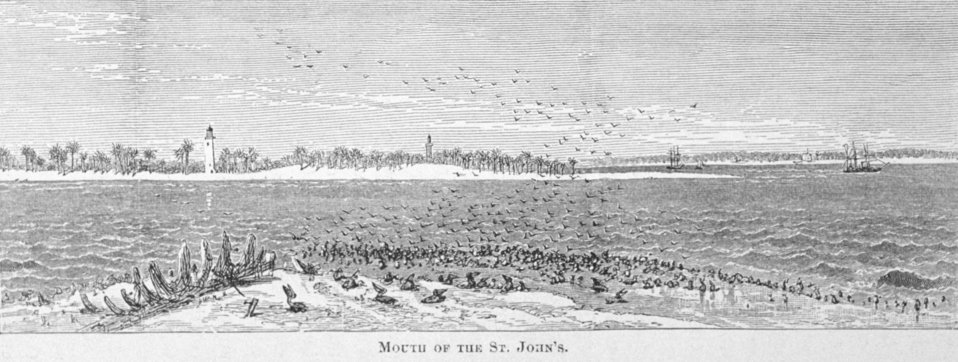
Mouth of the St. John's River - in 'Florida for Tourists, Invalids, and Settlers ' by George M. Barbour, 1881. Library Call No. F316 .B23 1881. The lighthouse is the St. Johns River Lighthouse, built in 1859, and near present-day Mayport.